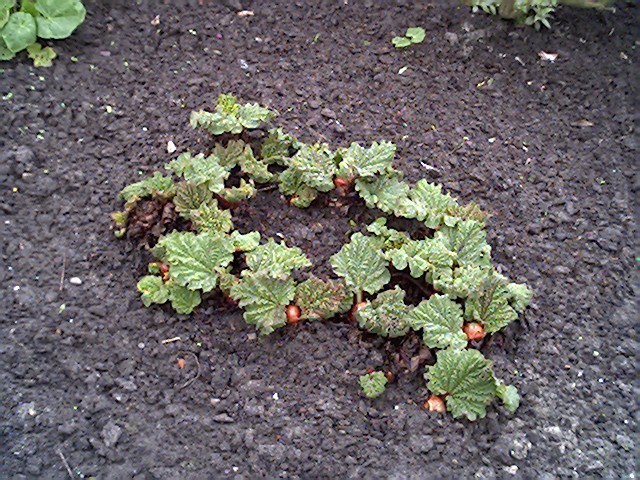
Rabarber. Serie foto's van een rabarberplant van 25 maart 2005 tot en met 13 mei 2005, één foto per week. Bestandsnamen: Rabarber-serie-1.jpg tot Rabarber-serie-8.jpg. Foto zelf gemaakt.